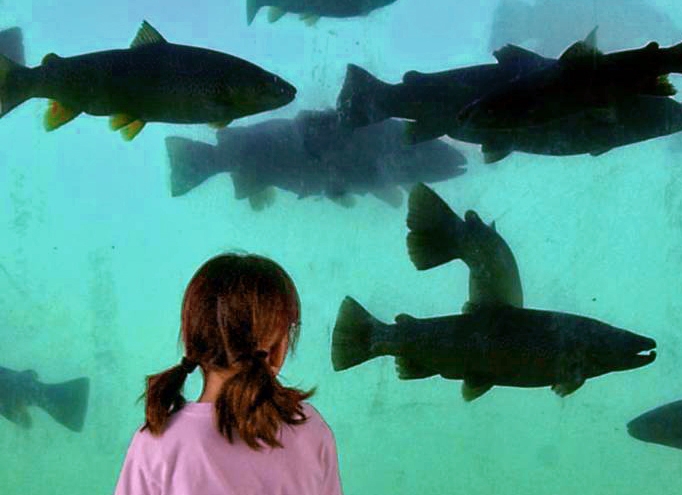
D.C. Booth Historic NFH Fish Viewing Windows

D.C. Booth HNFH attracts over 150,000 visitors - young and old alike - each year to the facility. The underwater fish viewing windows are a favorite among visitors.